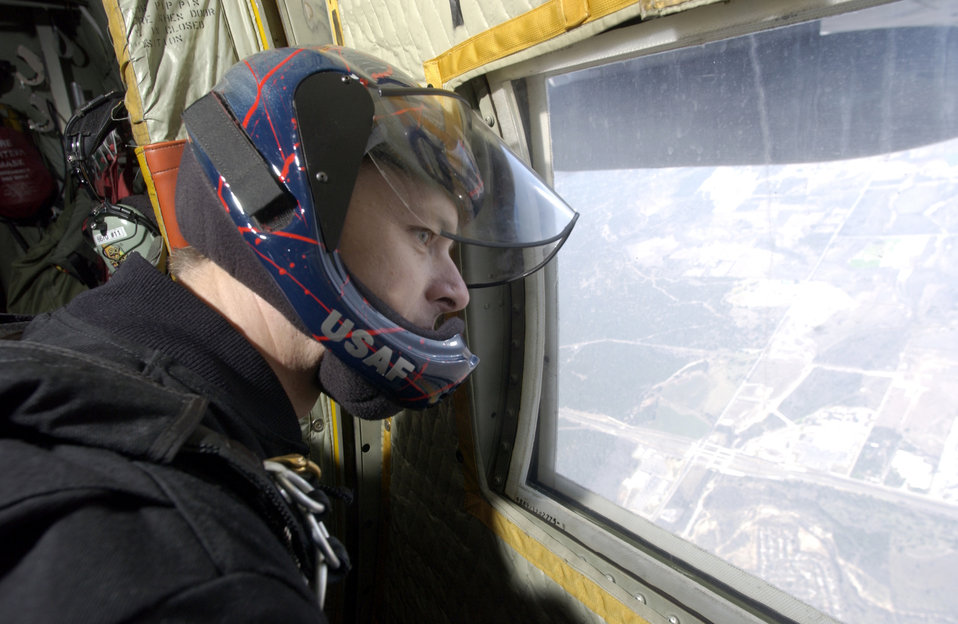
You might as well JUMP!

OVER TEXAS -- Tech. Sgt. Timothy Tweeter looks out of a C-130 Hercules to get a sighting of the parade grounds at Lackland Air Force Base, Texas. The sergeant and seven other combat controllers and pararescue instructors jumped onto the parade grounds during a proficiency training exercise Feb. 21. Sergeant Tweeter is a jumpmaster with the 342nd Training Squadron at Lackland.